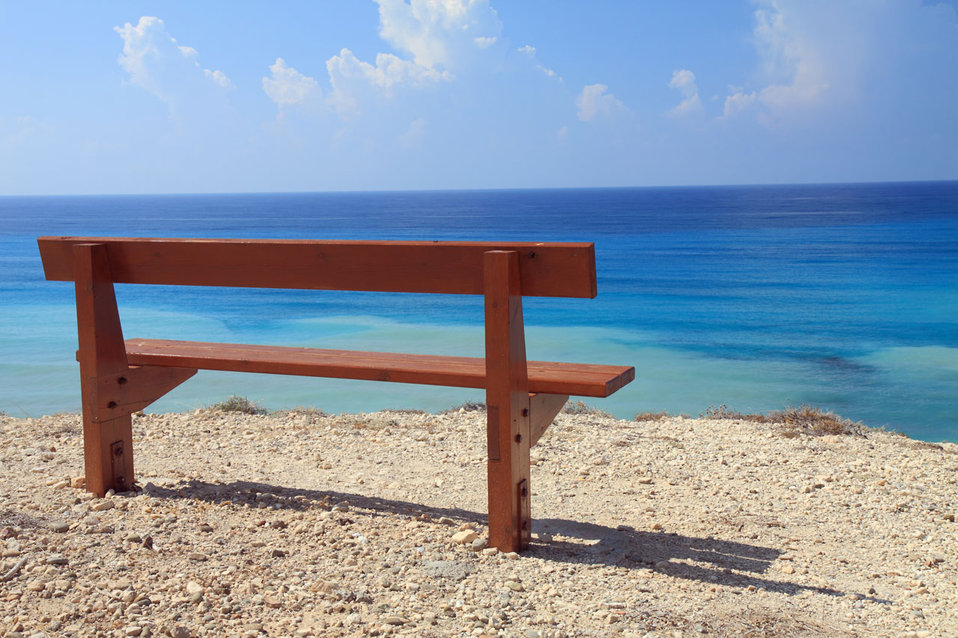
Bench and sea

Bench in cyprus near petra tou romiou (rock of aphrodite).